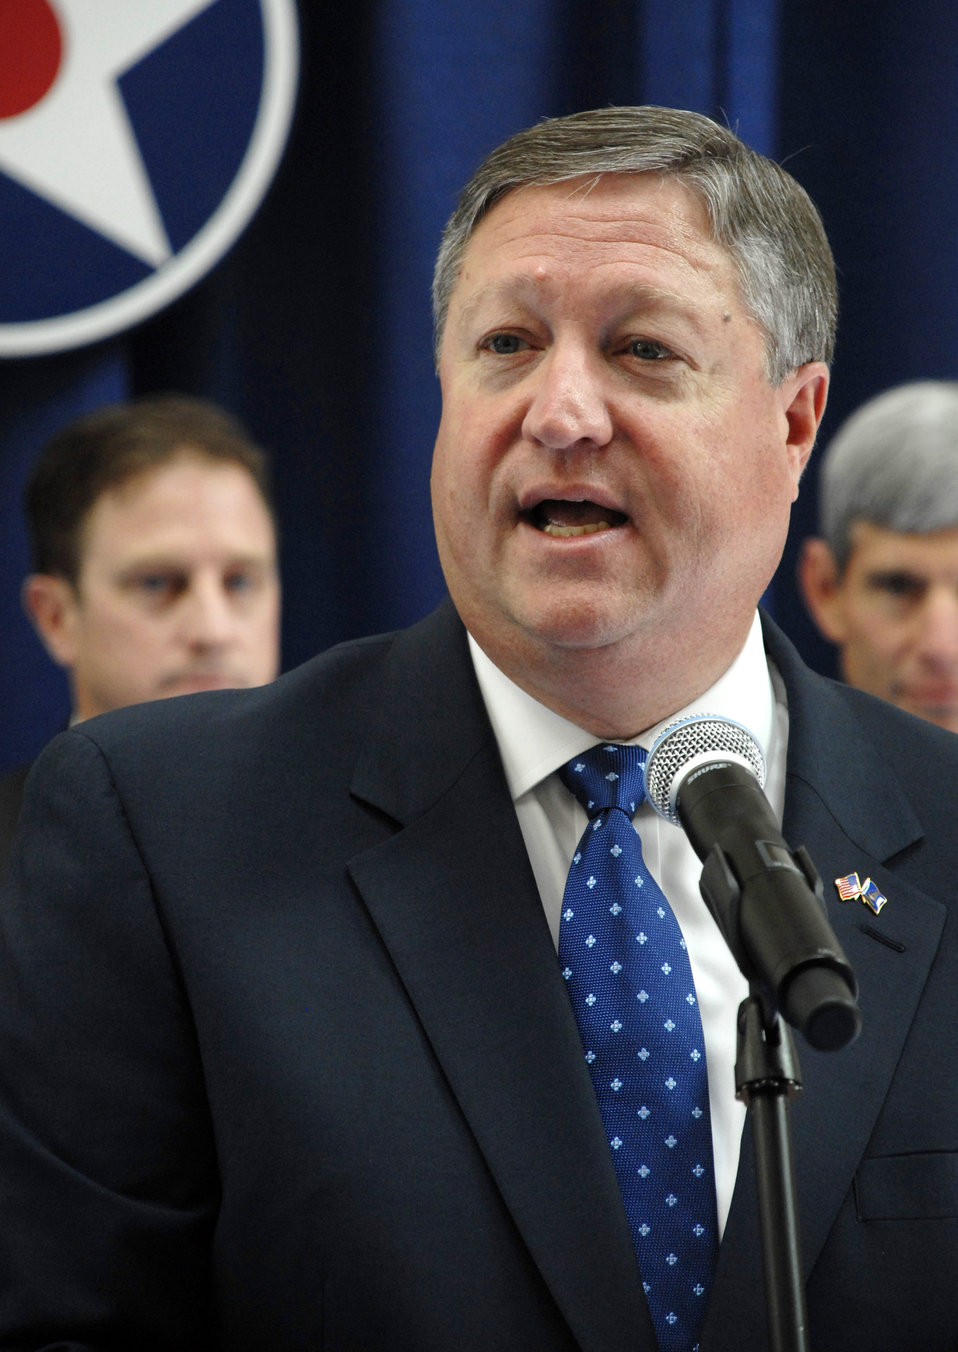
AFA Awards

Secretary of the Air Force Michael Donley welcomes conference attendees during a ribbon-cutting ceremony at the 2009 Air Force Association Air & Space Conference and Technology Exposition Sept. 14, in Washington, D.C.